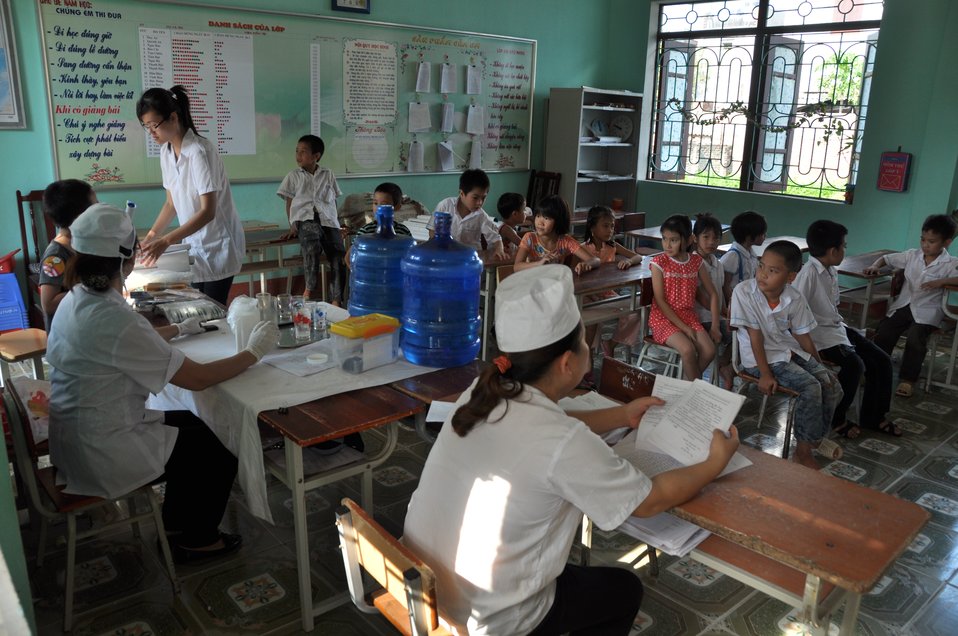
USAID supports deworming education and medication distribution in Bac Giang Province

May 20, 2013